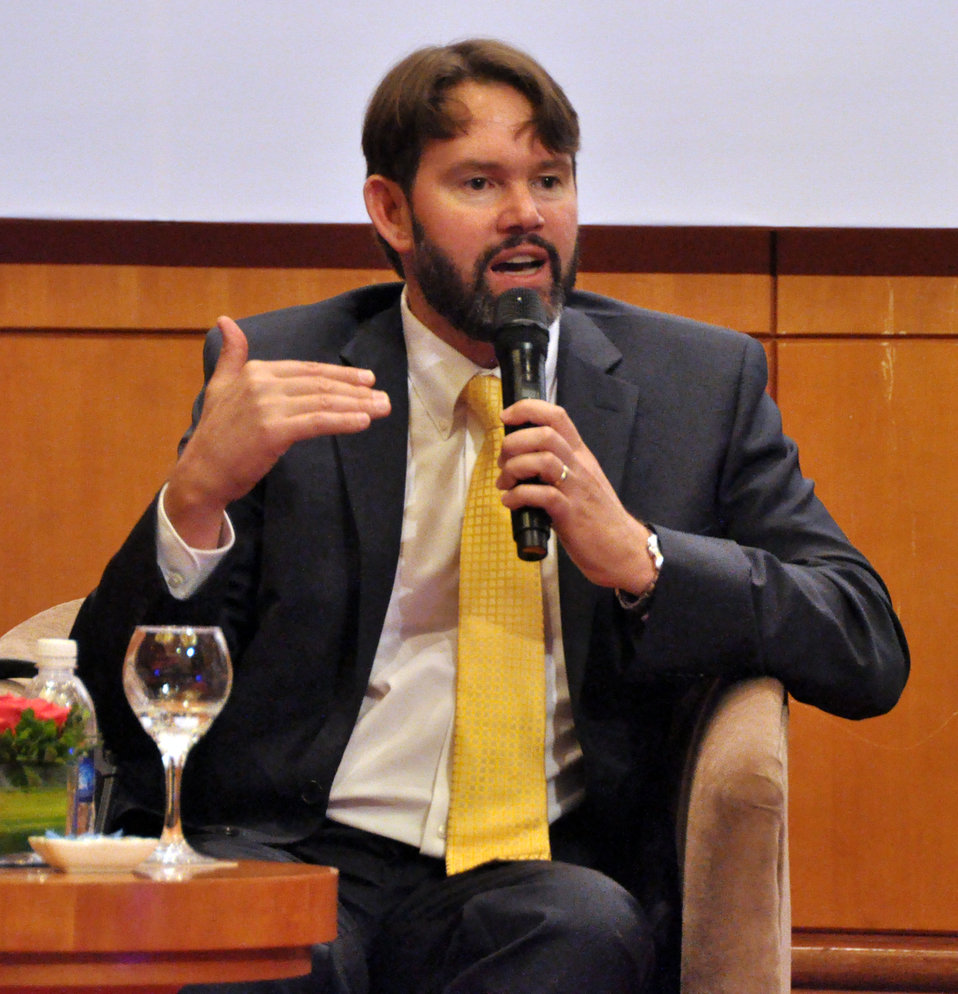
USAID's Support for Trade Acceleration Project (USAID STAR Plus) Closing Ceremony

Hanoi, August 26, 2013.